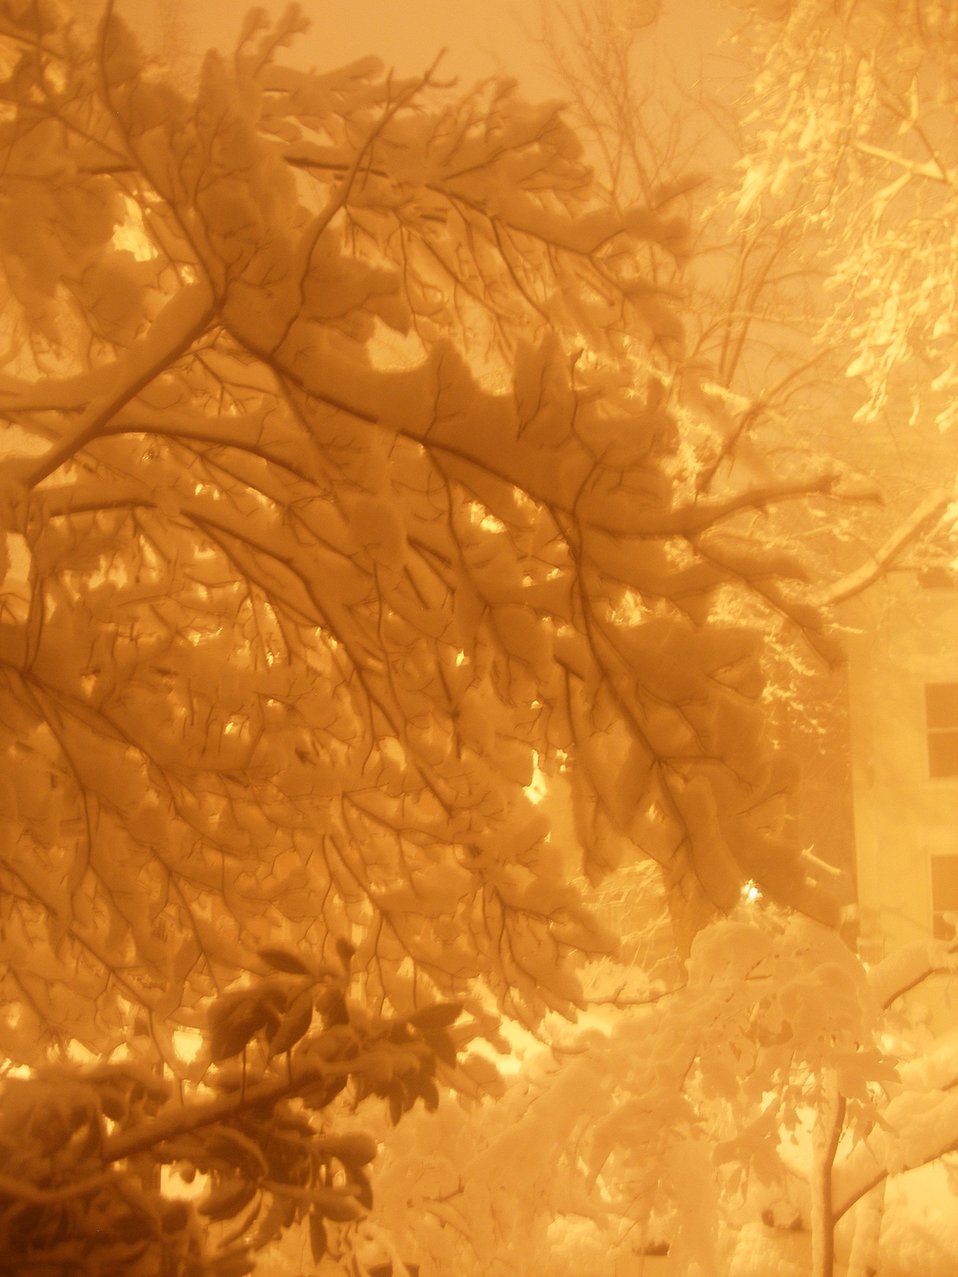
Night lights on snow during second major snowstorm of 2009/2010 season.